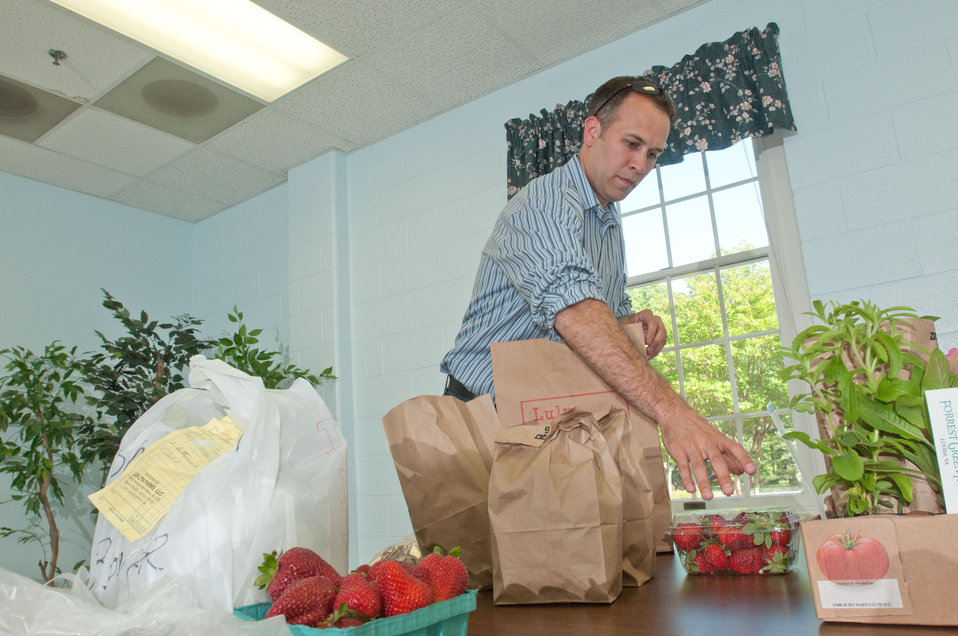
Taylor Goodman picks up his customized order of Fall Line Farms groceries at the Bon Air United Methodist Church pick-up point, in Richmond, VA, on Thursday, May 5, 2011. Traditional food cooperatives provide identical orders. This is one of several pick-up points in the Richmond area. This local food hub offers a wide variety of household food staples and specialty items. Members can pick their customized orders from an ever changing inventory of fruits, vegetables, meats, soaps, eggs, cheeses, flowers, honey, pastas, sauces, syrups, baked goods, mushrooms, flour and grains. Suppliers post what they have on a Lulus Local Food online listing and customers can make their selection. Then every Thursday suppliers team up with other suppliers to deliver orders to, one of several pick-up points, designated by the customer in or around the Richmond area.